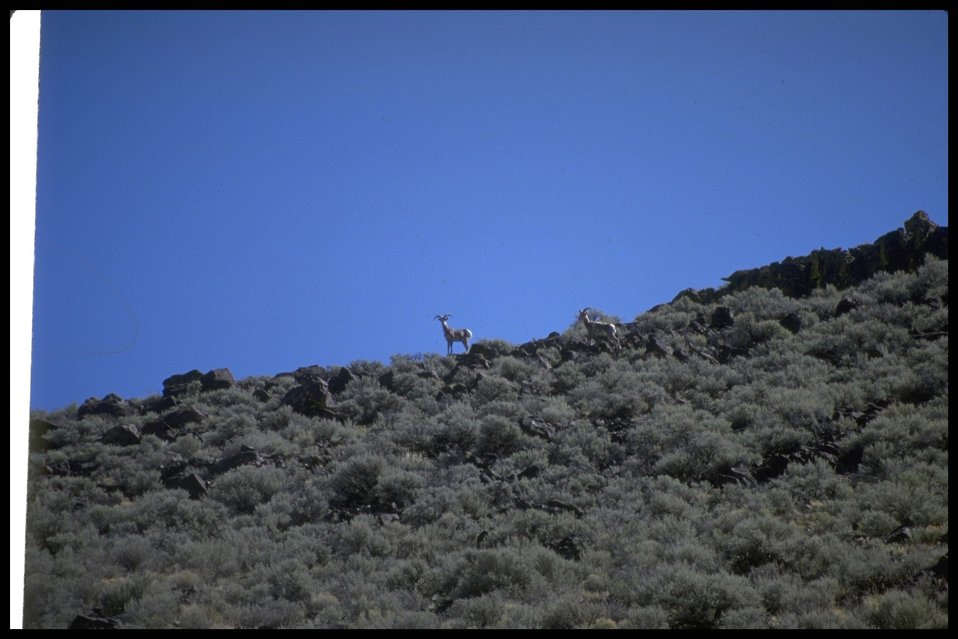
Far shot of Big Horned Sheep, Lakeview District.